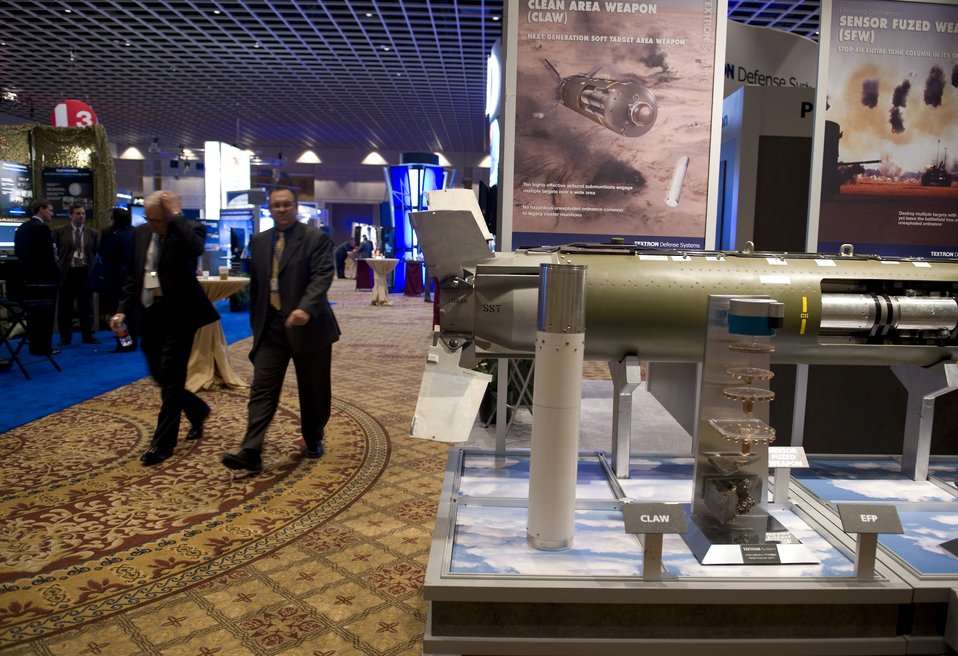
Generals discuss Guard, Reserve, on call Air Force

The Air Force Association's Air Warfare Symposium and Technology Exposition showcases the latest military technology Feb. 18, 2010, at the Rosen Shingle Creek Hotel in Orlando, Fla.